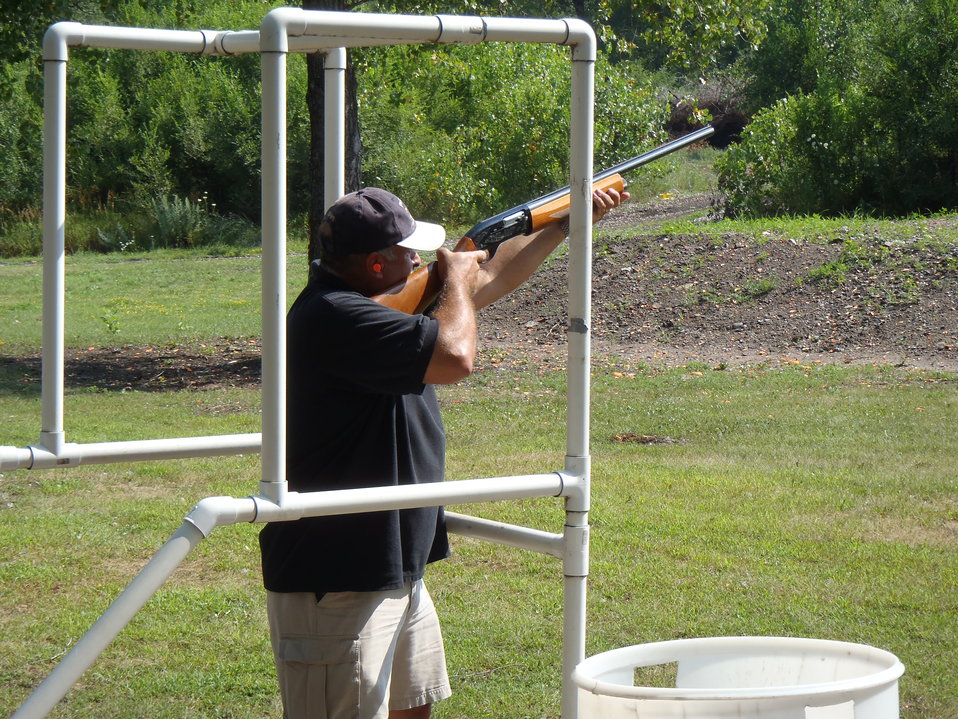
Jim Leach, Refuges supervisor.